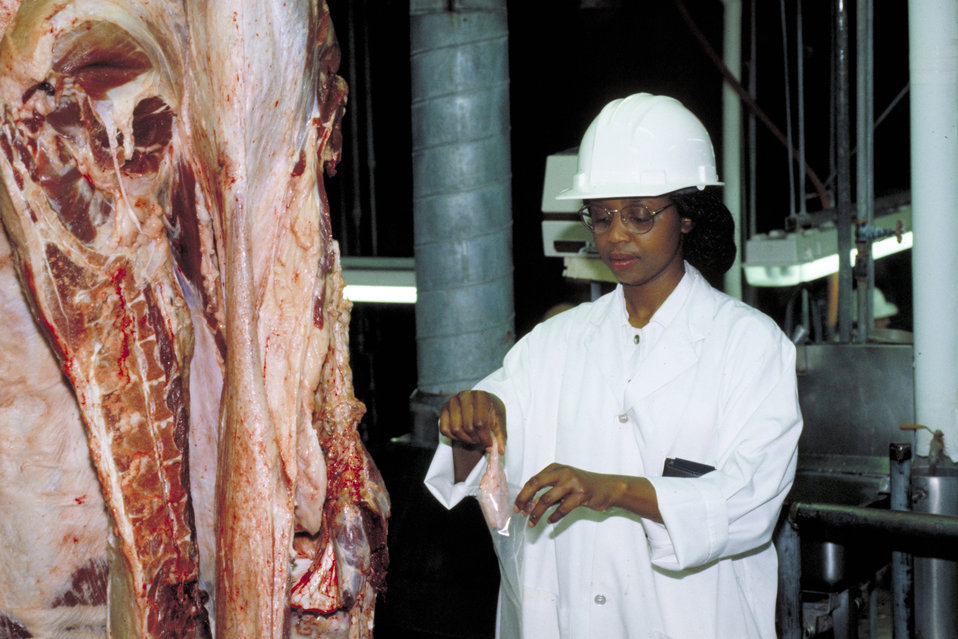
U.S. Department of Agriculture (USDA) Food Safety Inspection Service (FSIS) veterinarian collects beef carcass samples for microbiological testing to verify the adequacy of the Hazard Analysis and Critical Control Points (HACCP) issued by FSIS on June 15, 1995. USDA photo Lester Shepherd.